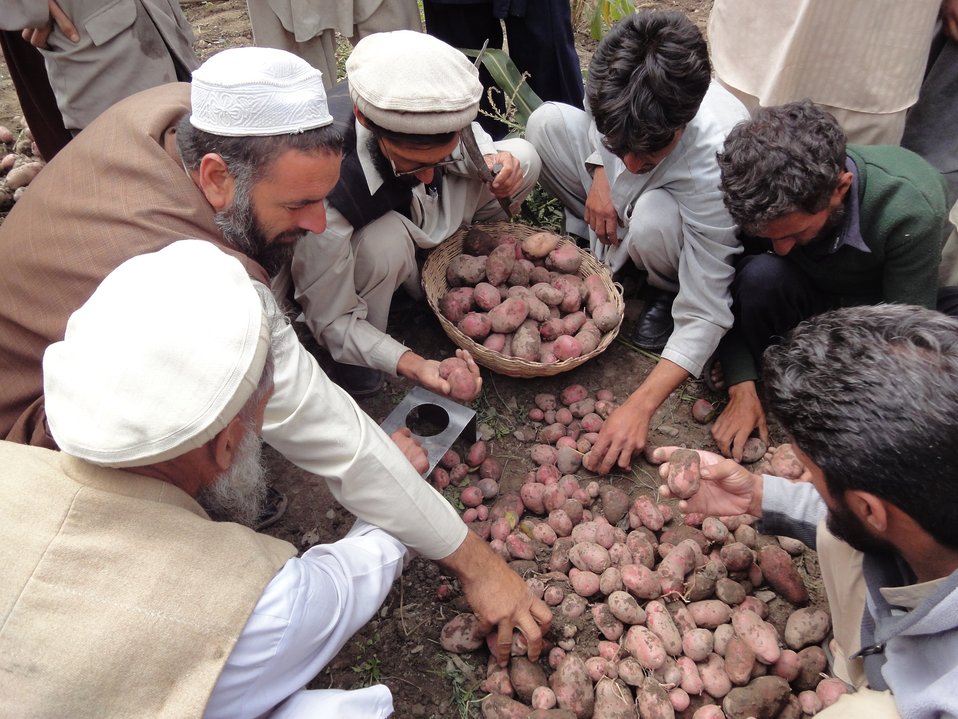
USAID Supports Potato Farmers from Swat - 3